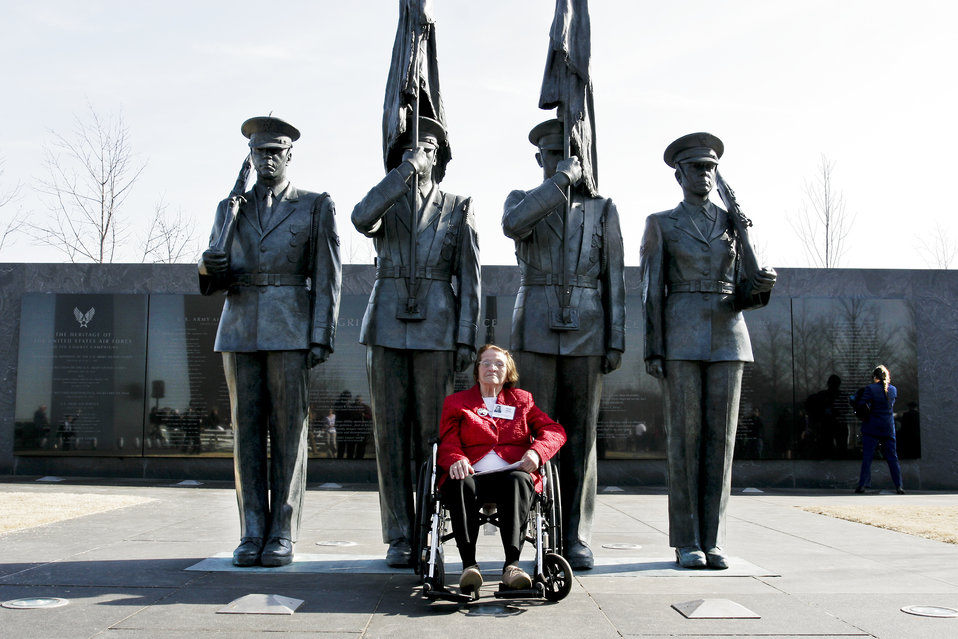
Women pilots of World War II inspired generations

Rose Penn Ross, a pilot who flew with the Women Airforce Service Pilots during World War II, poses for a photo at the Air Force Memorial after a wreath-laying ceremony to honor the pilots at the memorial March 10, 2010, in Arlington, Va. The ceremony is part of a two-day event to honor the 1,102 women civilian pilots who served their country by flying military aircraft under the direction of U.S. military forces.